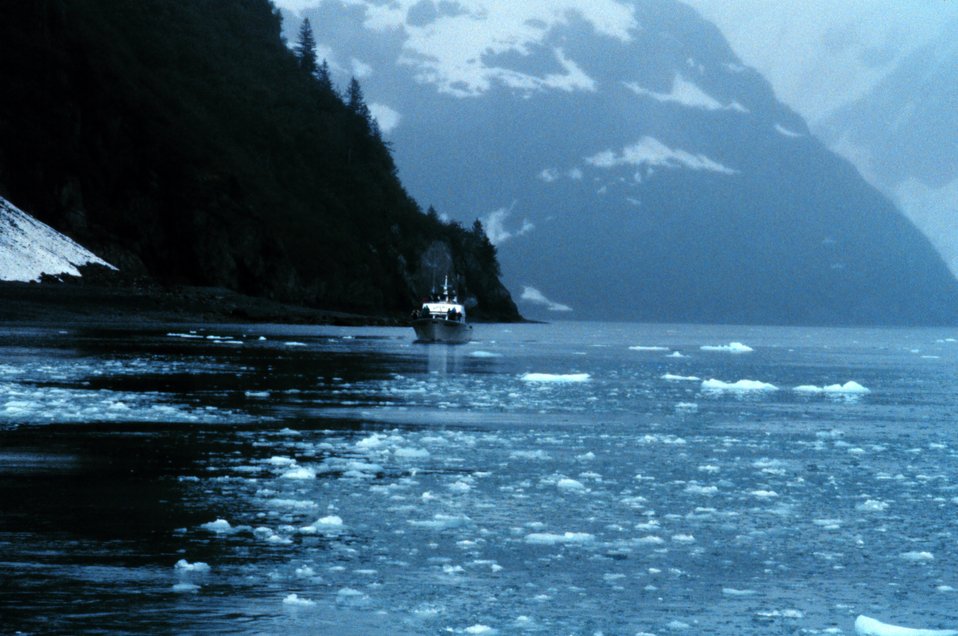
Cruise boat dwarfed in Kenai Fjords